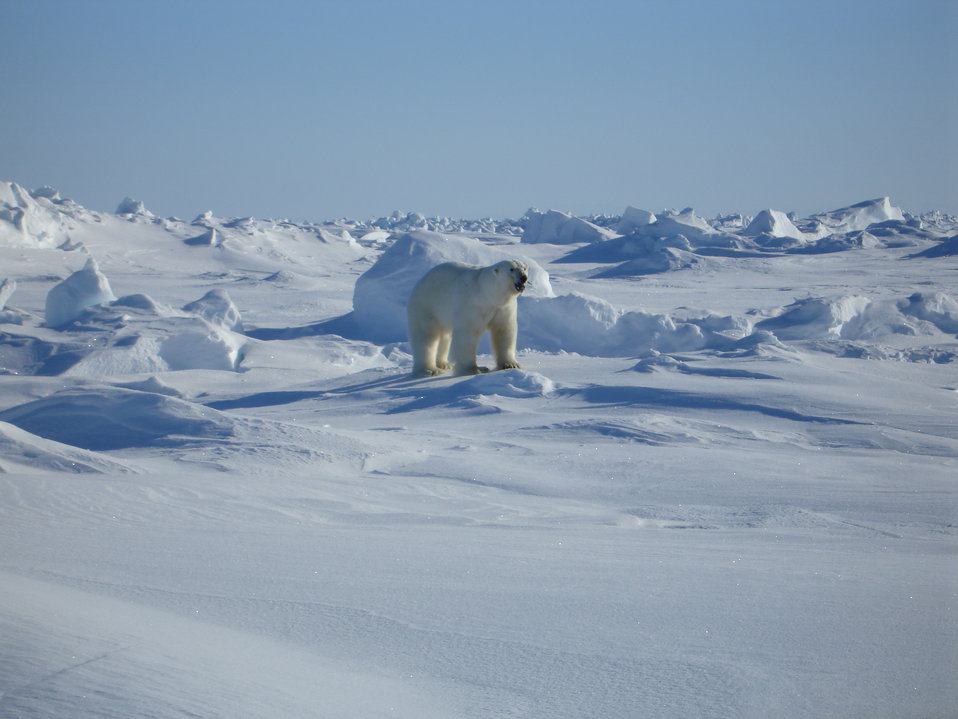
Male polar bear near Kaktovik, Alaska

A male polar bear stands alert on the Arctic coast near Kaktovik, Alaska